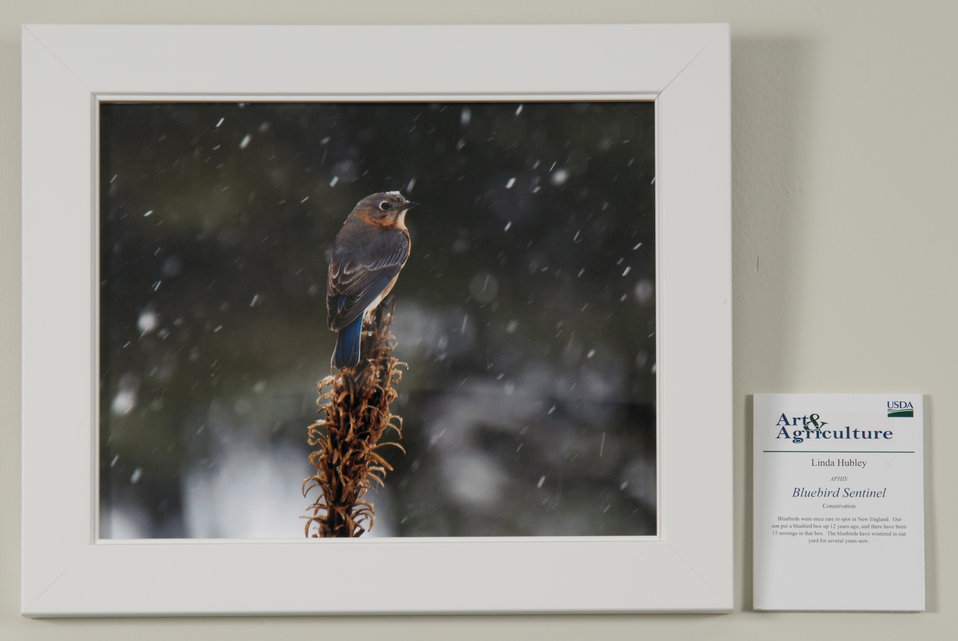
Online Viewer's Choice entries of the 2013 Art & Agriculture, Tuesday, July 9, 2013, in the South Building, Washington, D.C. Themes were expressed by employees from across the department and the contest was open to full-time and part-time USDA employees. Winning artwork will be displayed till the end of the year. U.S. Artistic expression is a creative outlet that is vital for an individual to grow and develop.